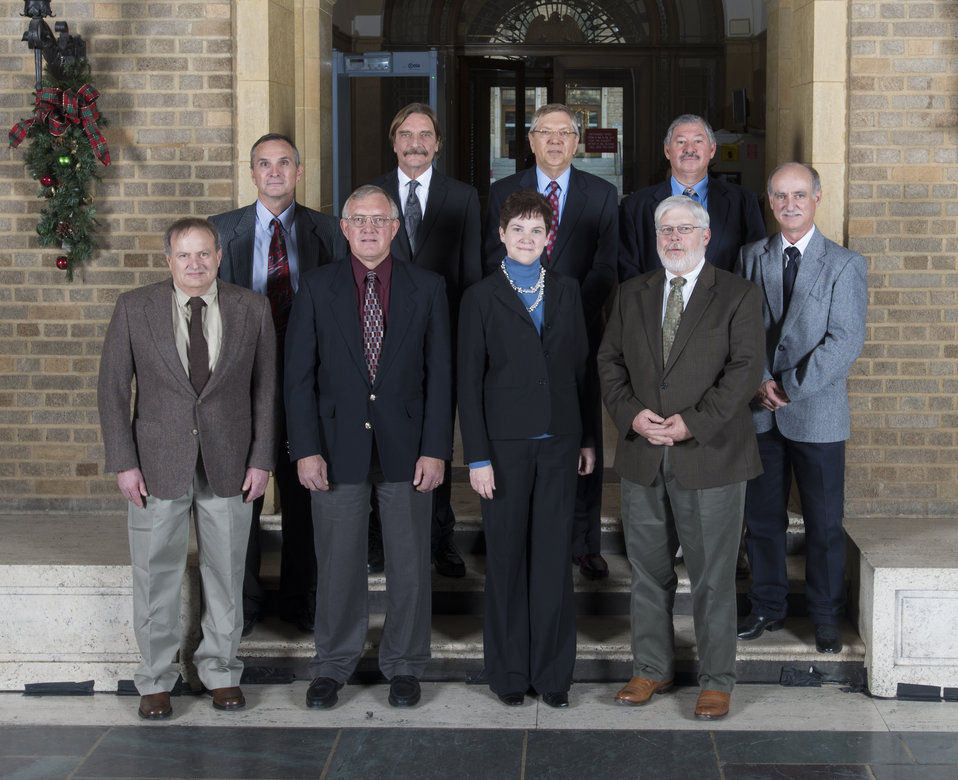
Agriculture Deputy Secretary Krysta Harden stands with the Interagency Ecological Site Implementation Team Natural Resources Conservation Service on the patio at the U.S. Department of Agriculture (USDA) in Washington, D.C. on Wednesday, Dec. 11, 2013. The team received the Secretary’s Honor Award for developing an interagency Ecological Site Manual and Handbook providing clear guidance and delivering training resulting in uniform implementation across scientific, agency and Department boundaries.